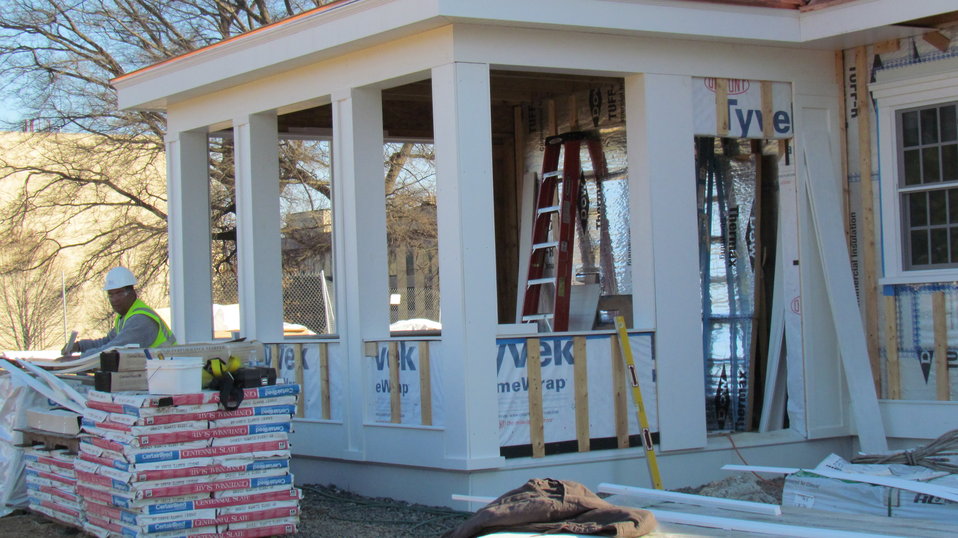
Workmen installing cement board siding. A portion of roofing shingles (on ground) awaiting installation on rear roof of facility.